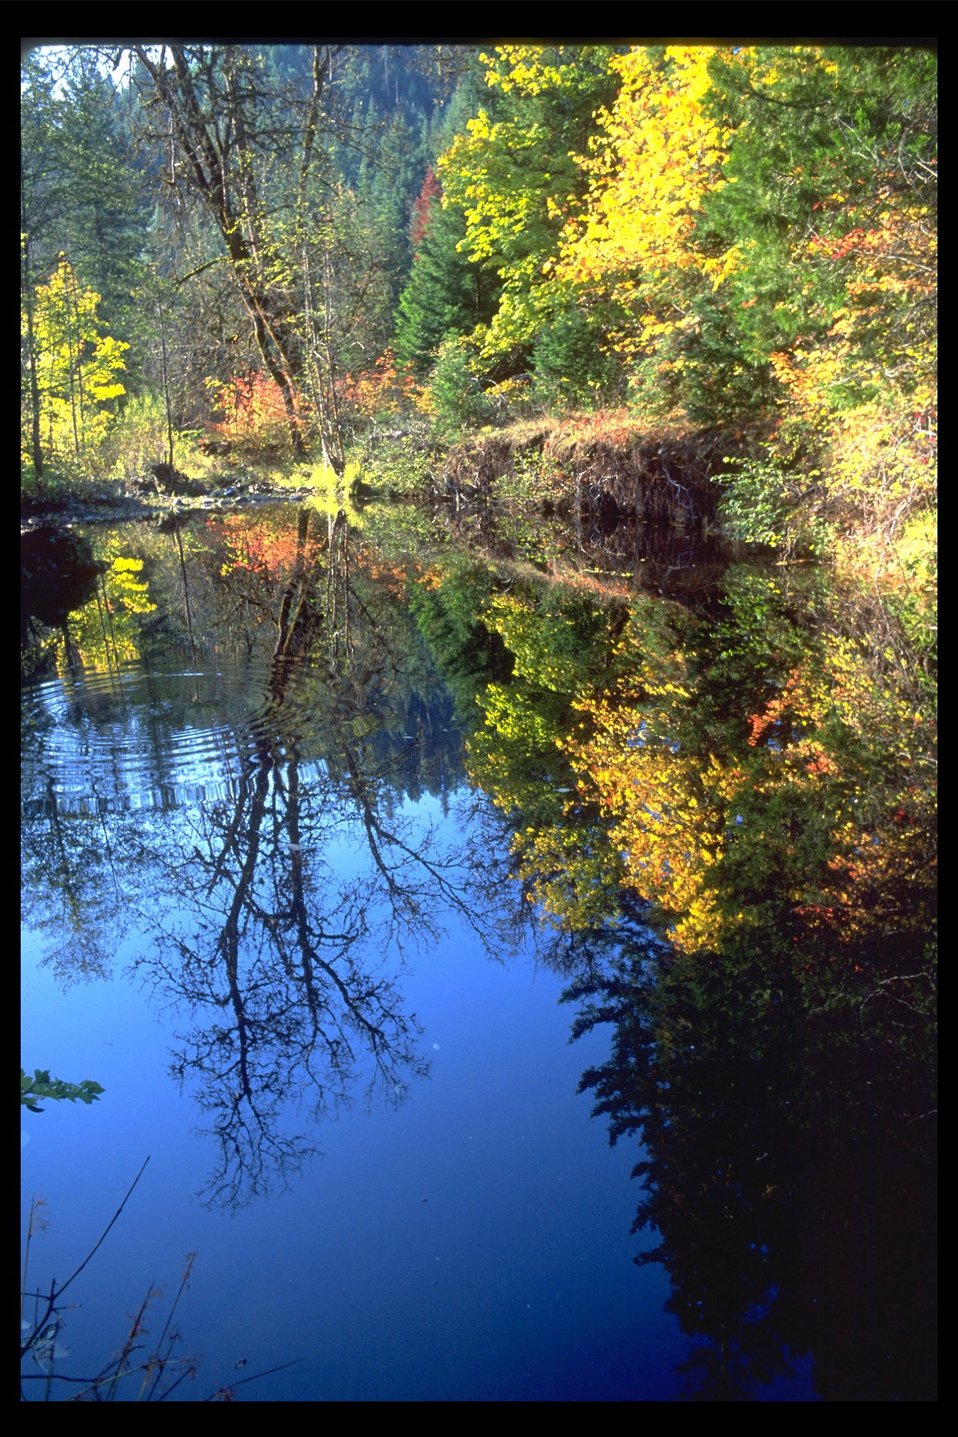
Walpole Creek near confluence with West Fork Trail Creek.